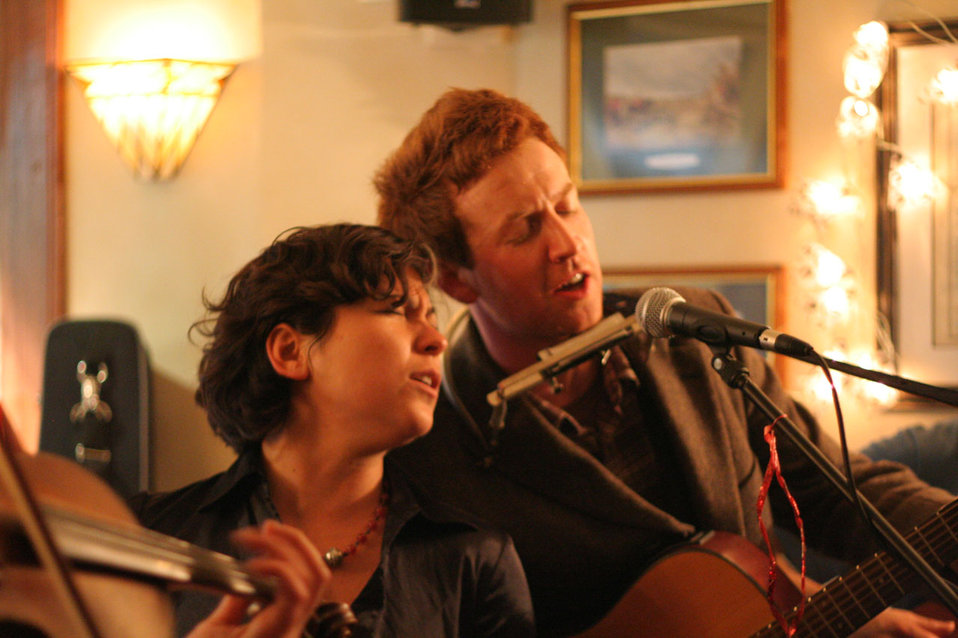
Singers at open mic session in a pub.